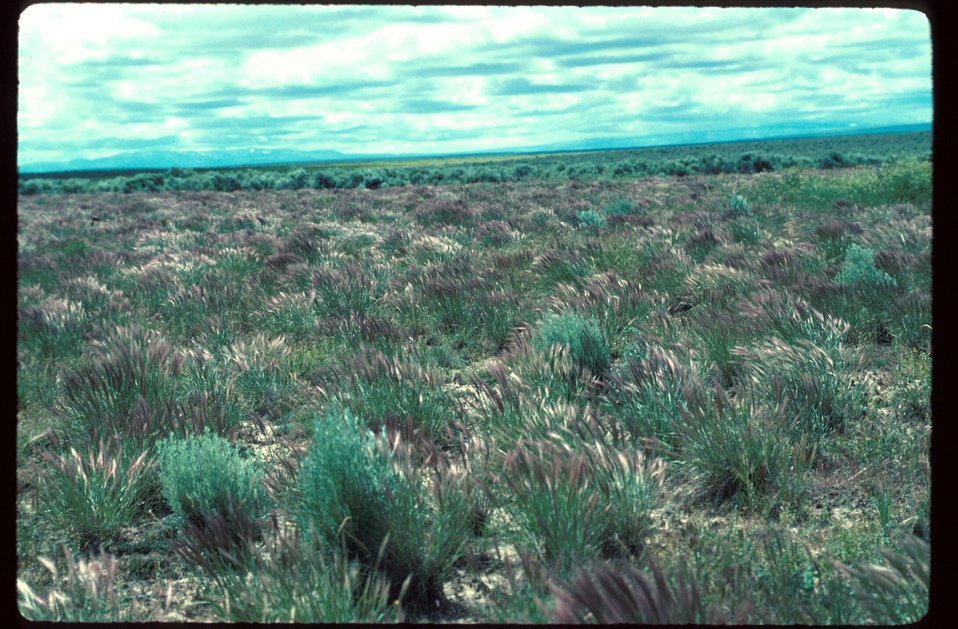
Jarbridge Squirreltail Range Restoration Project